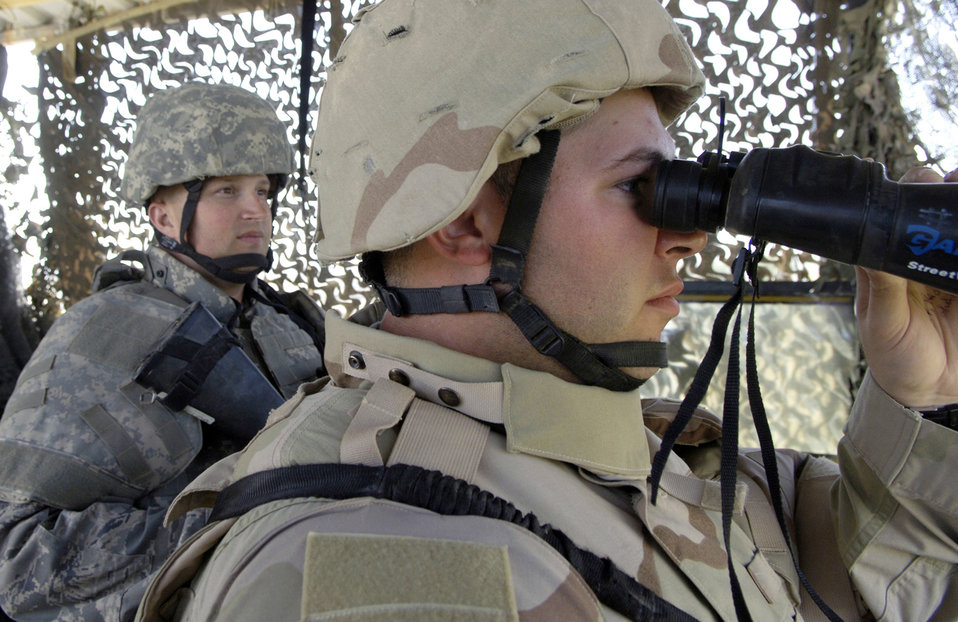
Anti-terrorism office helps Balad Airmen stay safe

Airman 1st Class Micheal Ramsey, 332nd Expeditionary Security Forces Squadron watchtower sentry, scans the north perimeter of the base here for suspicious activity while sentry Staff Sgt. Robert Meade stands at the ready postition. Sergeant Meade is from Lackland Air Force Base, Texas and Airman Ramsey is from Vandenberg AFB, Calif.